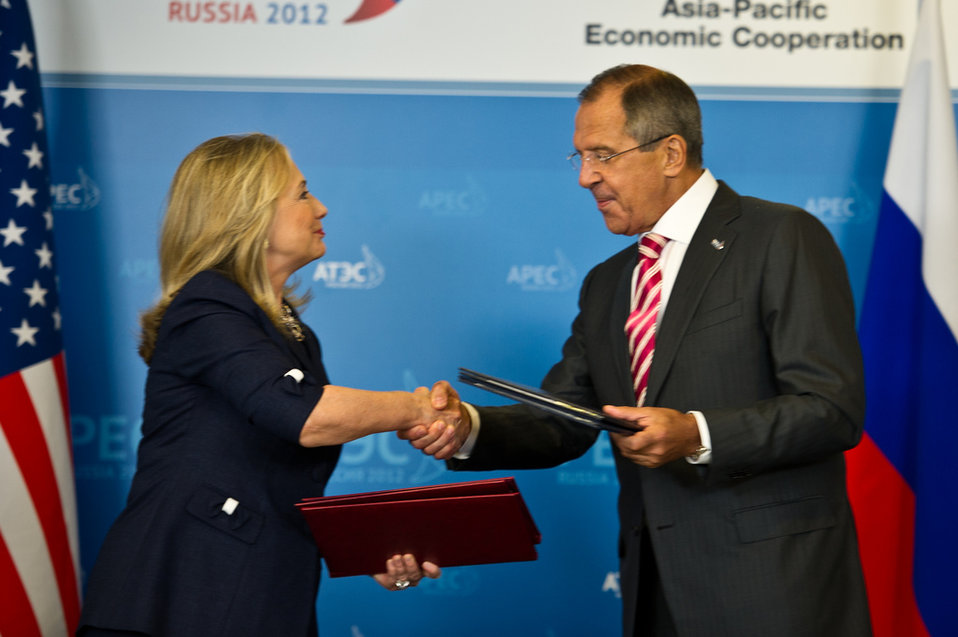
Secretary Clinton and Russian Foreign Minister Lavrov Shake Hands

U.S. Secretary of State Hillary Rodham Clinton shakes hands with Russian Foreign Minister Sergey Lavrov after signing a Memorandum of Understanding between the Government of the United States of America and the Government of the Russian Federation on Cooperation in the Antarctic during the Asia-Pacific Economic Cooperation Leaders' Week in Vladivostok, Russia, September 8, 2012.